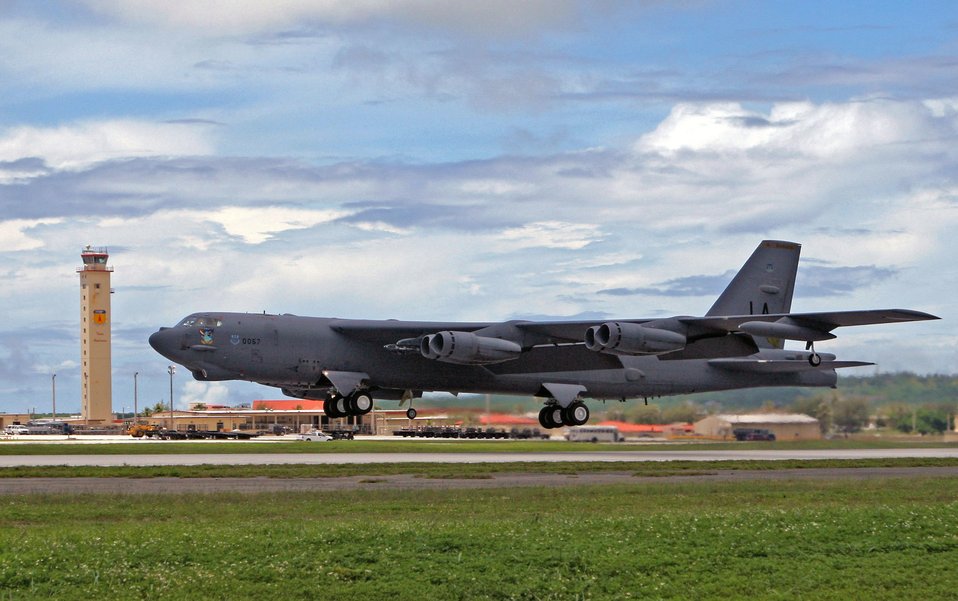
Stratofortresses test operational skills in Koa Lightning

A B-52 Stratofortress takes off from Andersen Air Force Base, Guam, to participate in an exercise scenario Aug. 22. The aircraft, aircrew and maintainers are deployed from Barksdale AFB, La., as part of the continuous bomber presence in the Pacific region. During their deployment to Guam, the bomber squadron's participation in exercises will emphasize the U.S. bomber presence, demonstrating U.S. commitment to the Pacific region.